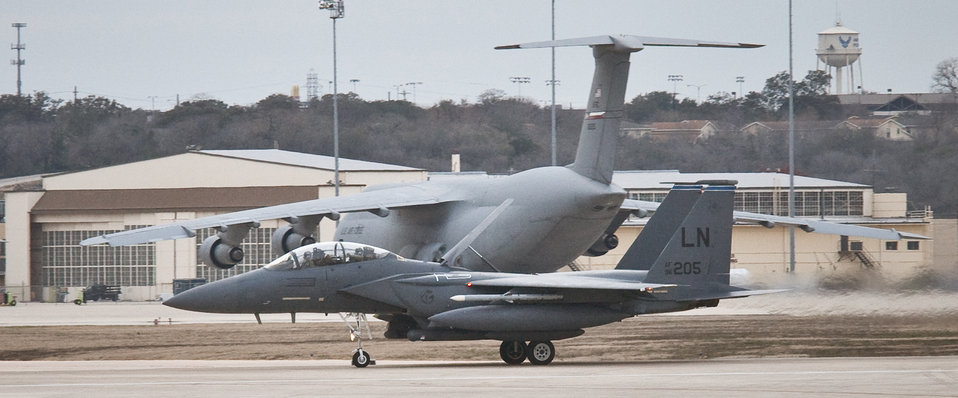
F-15E pilot strikes 4,000 hours

Lt. Col. David Iverson and Capt. Tim Tendall, with the 492nd Fighter Squadron, apply the brakes to slow their F-15E Strike Eagle at Lackland Air Force Base, Texas, Jan. 11, 2010. Colonel Iverson passed 4,000 flight hours in the F-15E during the flight from Royal Air Force Lakenheath, England. The transatlantic flight was supported by seven in-flight refuelings. The exact moment he passed the milestone was while connected to a KC-135 Stratotanker.